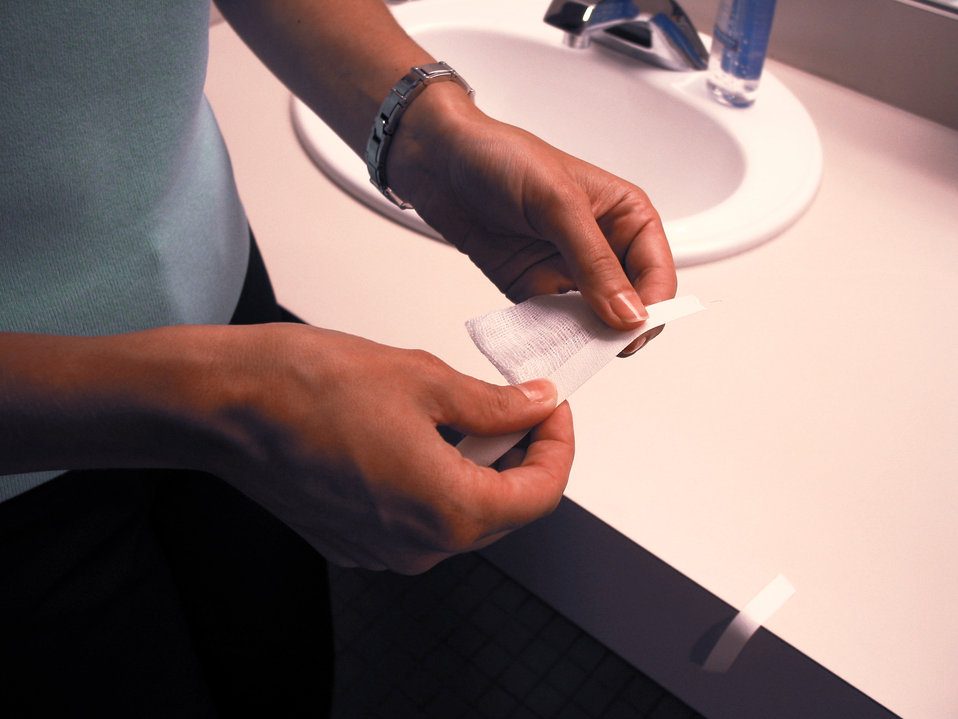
This demonstrates how a smallpox vaccinee correctly prepares a gauze bandage to cover her vaccination site.